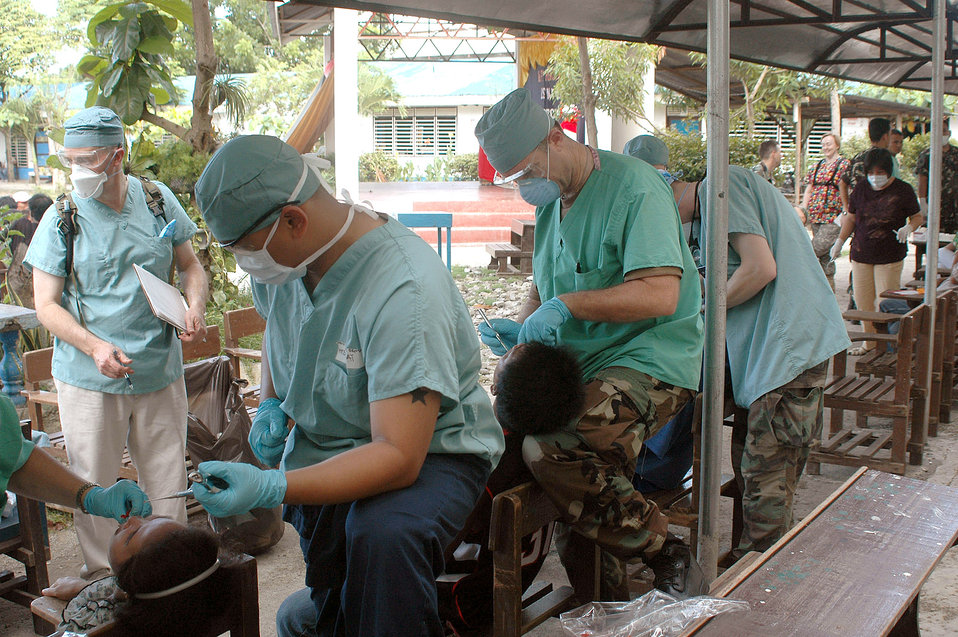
Aboard the USNS Mercy

Air Force and Navy dentists from the U.S. Navy hospital ship, USNS Mercy, extract teeth during a medical civic action program that helped more than 1,000 people in Zamboanga City, Philippines on Sunday, May 28, 2006. The doctors extracted more than 400 teeth from 221 people in six hours. The crew is conducting humanitarian and civic assistance in South and Southeast Asia and the Pacific Islands.